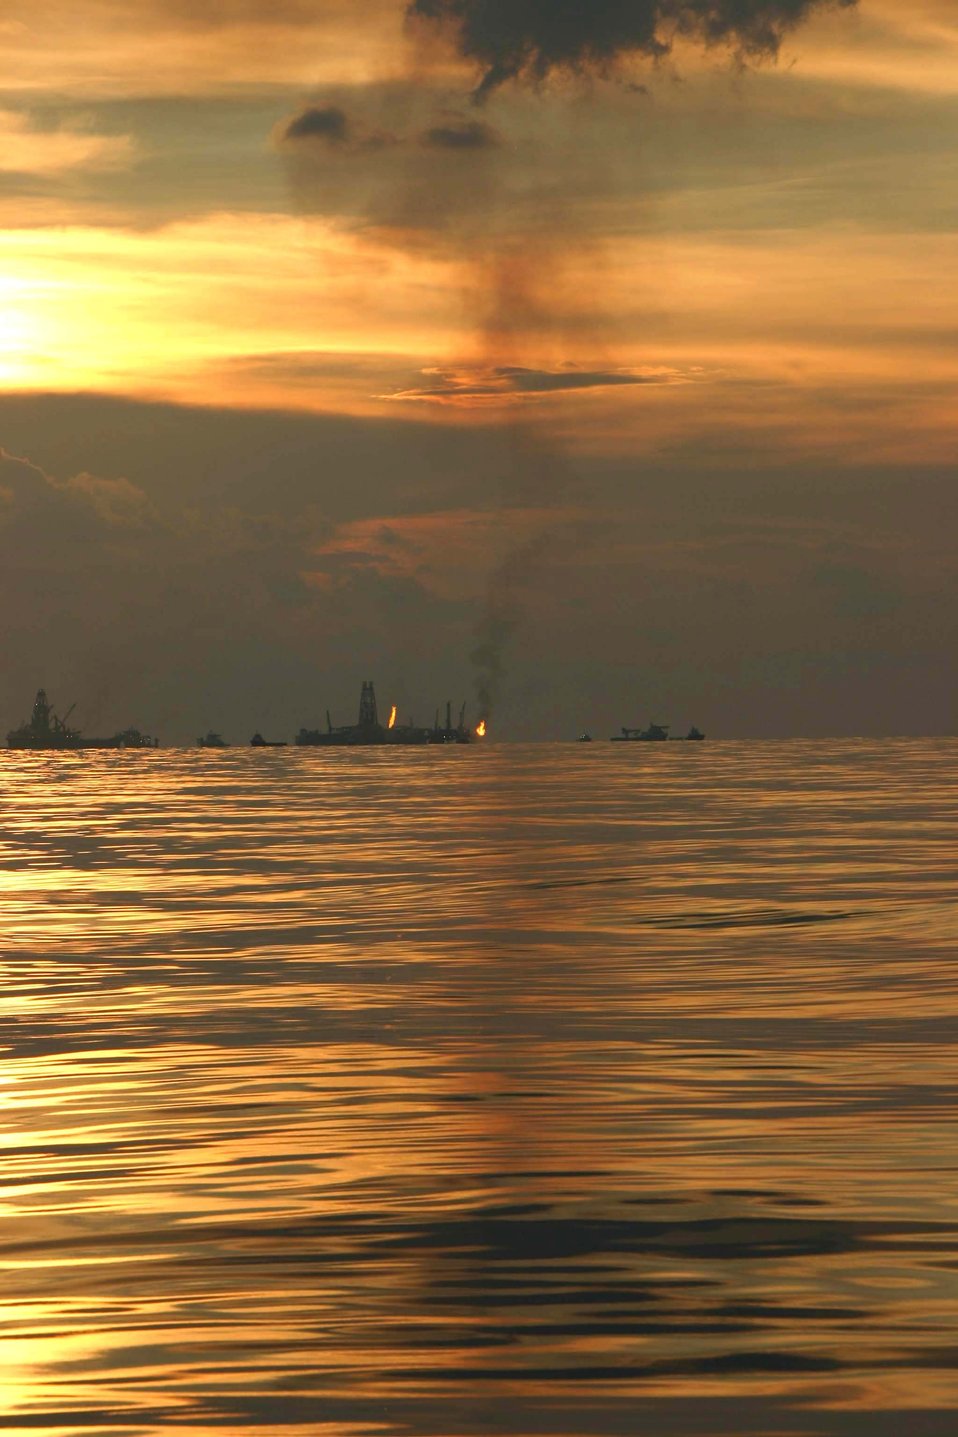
An oil recovery vessel flares gases during the summer 2010 oil spill. NOAA researchers and colleagues used atmospheric measurements during the spill to derive independent estimates of the recovery rate, oil spill rate and the fate of the spilled gases and oil.